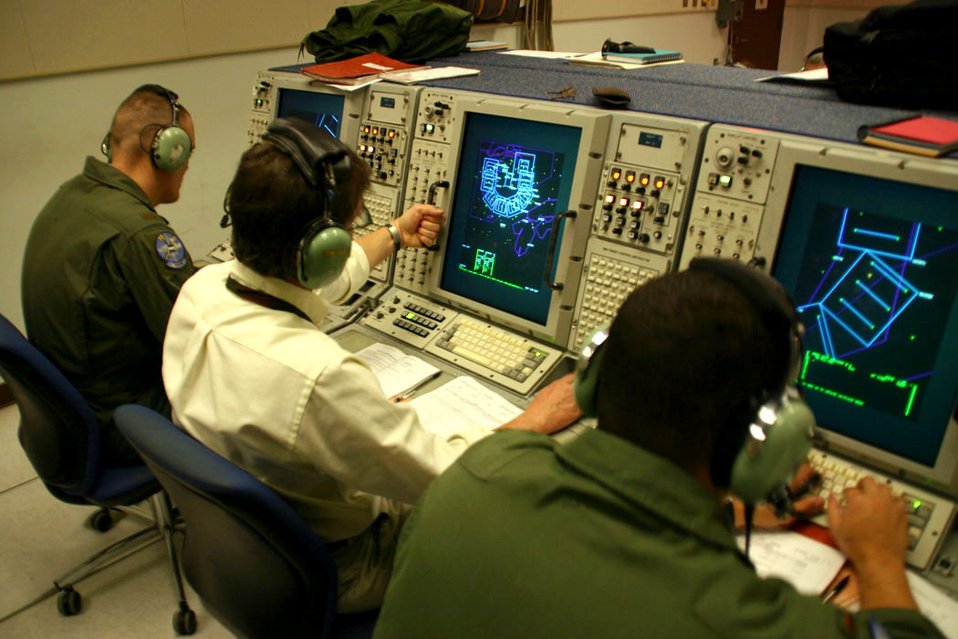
Sim training

Airmen and civilians from the 552nd Air Control Wing work in the mission simulators during a training exercise at Tinker Air Force Base, Okla. The programs used in the mission simulations, as well as in the E-3 Sentry itself during real-world missions, are written, tested and released for use by Airmen in the 552nd Communications Group.